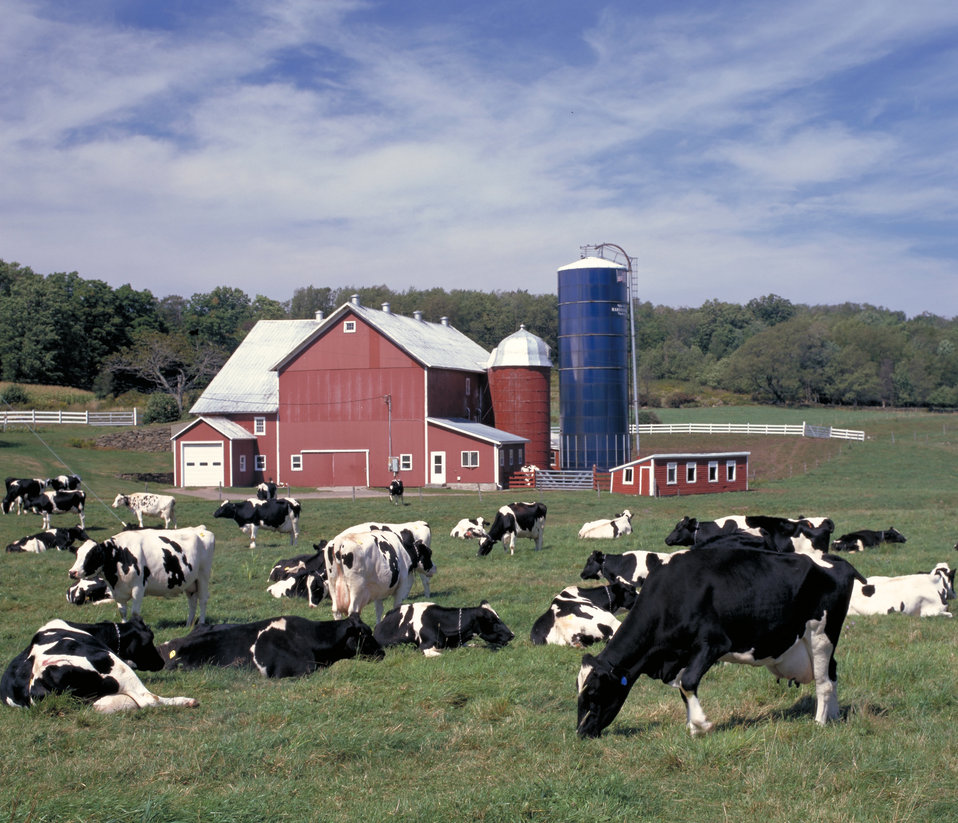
Hallaway Dairy Farm in Delhi, NY, September 1999.